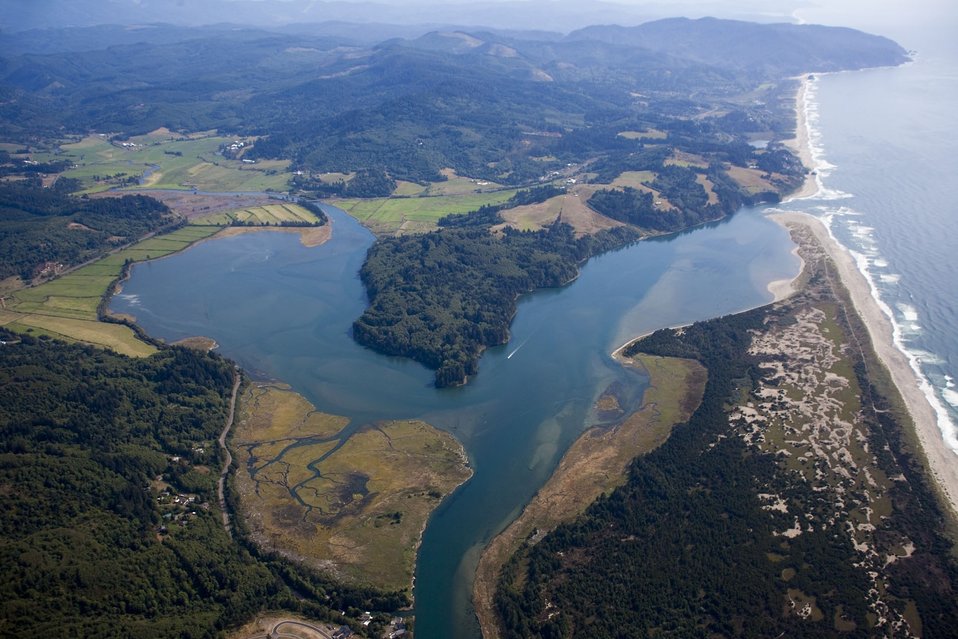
Nestucca Bay NWR

An aerial view looking south toward Cannery Hill in the center shows Nestucca Bay National Wildlife Refuge in Oregon.